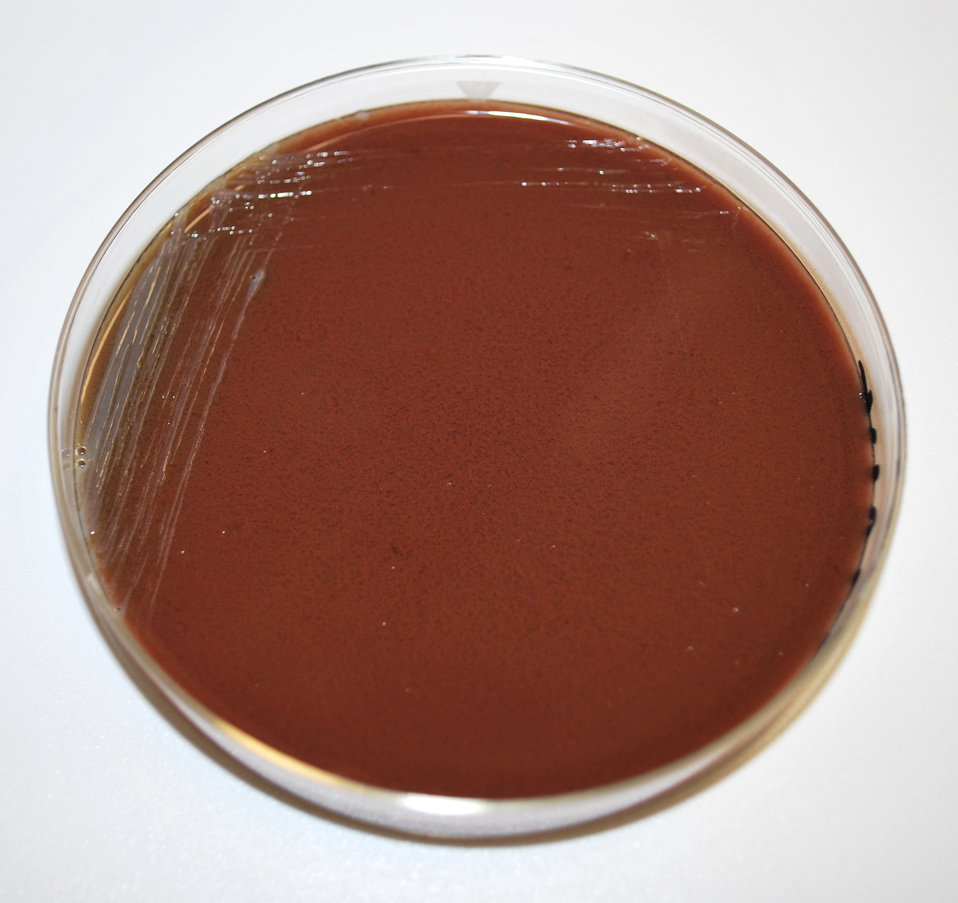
This image depicts a Petri dish containing a chocolate agar medium, which had been inoculated with Gram-negative Francisella tularensis live vaccine strain (LVS) bacteria. F. tularensis is the pathogen responsible for causing the disease tularemia. This was the appearance of the colonial growth after 24 hours of incubation. What is tularemia?